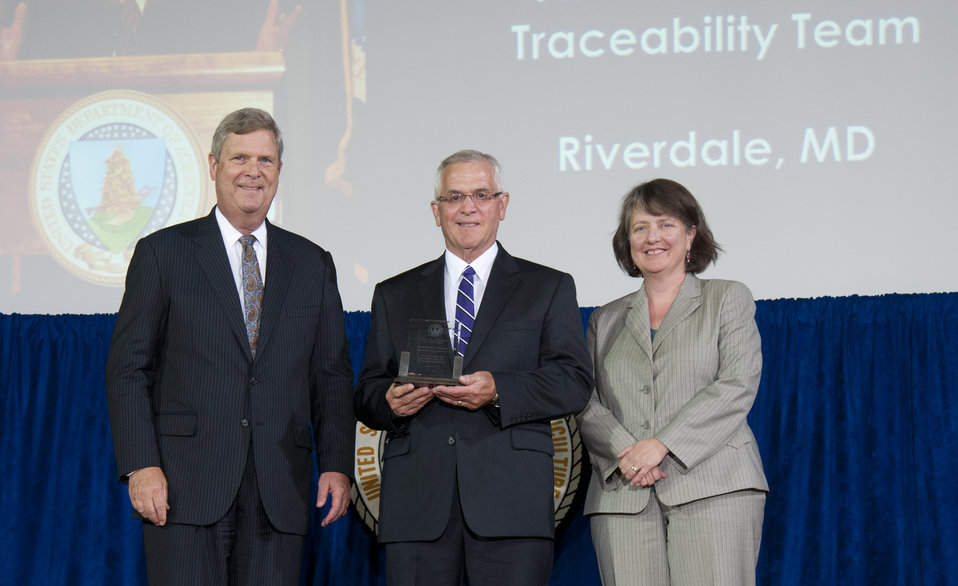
Agriculture Secretary Tom Vilsack and Agriculture Deputy Secretary Kathleen Merrigan present the Secretary’s Honor Award to Animal Disease Traceability Team Animal and Plant Health Inspection Service (APHIS) group leader Neil E. Hammerschmidt at the U.S. Department of Agriculture (USDA) 64th Annual Honor Awards Ceremony in Washington, D.C. on Wednesday, Sept. 12, 2012. The Animal Disease Traceability Team developed a flexible animal disease traceability system that encompasses exemplary stakeholder outreach and leverages the strengths of States, Tribes, and producers.